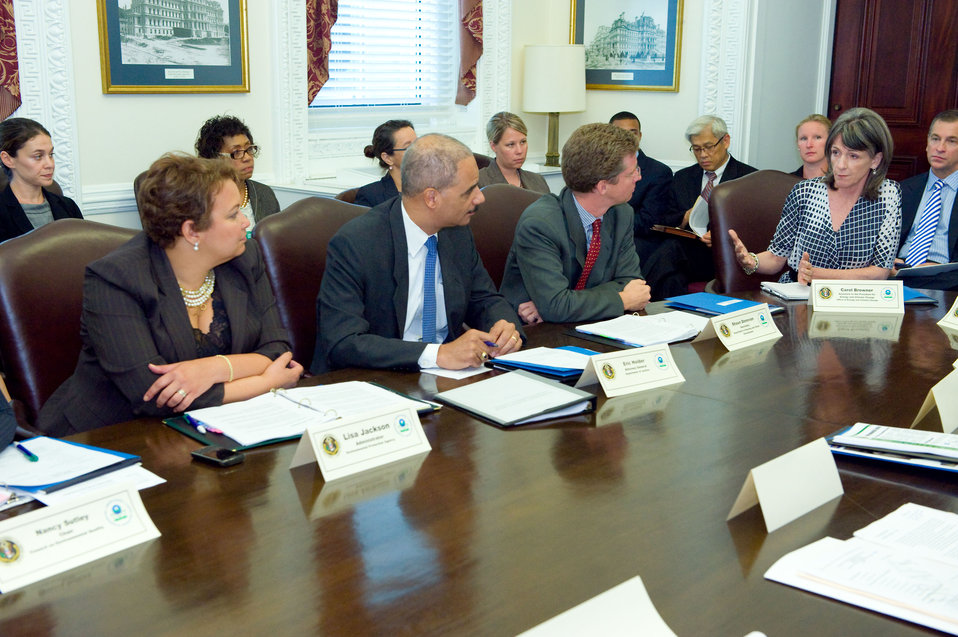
EPA Hosts Historic Meeting on Environmental Justice

Left to right, Lisa P. Jackson, Administrator, Environmental Protection Agency, Eric Holder, Attorney General, Shaun Donavan, Secretary, Department of Housing and Urban Development, Carol Browner, Assistant to the President for Energy and Climate Change, Office of Energy and Climate Change.

Read more about this historic meeting

Learn more about EPA